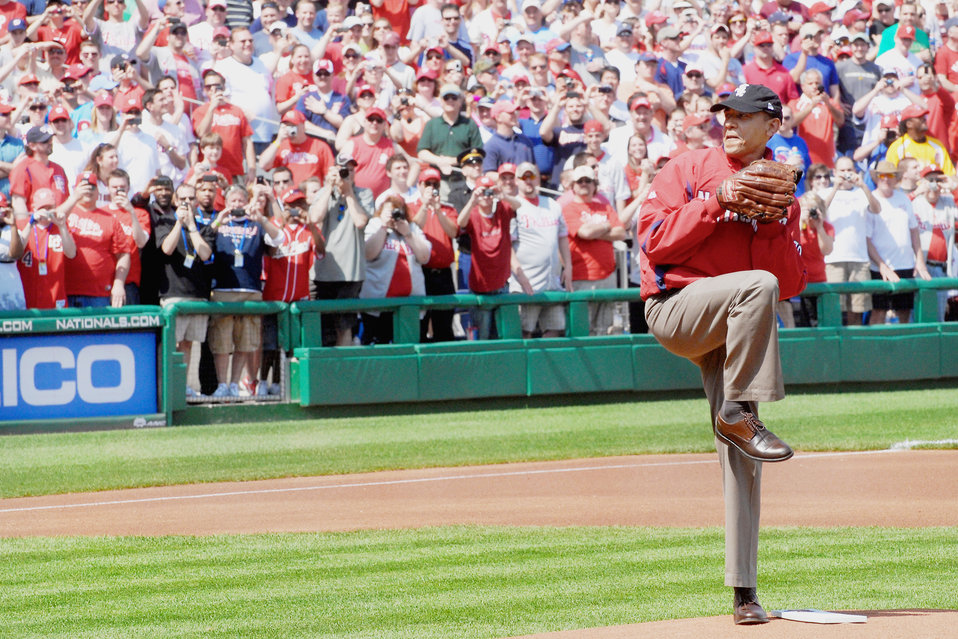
President throws pitch, greets children at Nationals game

President Barack Obama throws out the ceremonial first pitch to start the baseball season for the Washington Nationals April 5, 2010, at Nationals Ball Park in Washington, D.C. The Washington Nationals honored military children, inviting nine children whose parents are deployed to step onto the infield with the starting players to see the president throw out the first pitch.